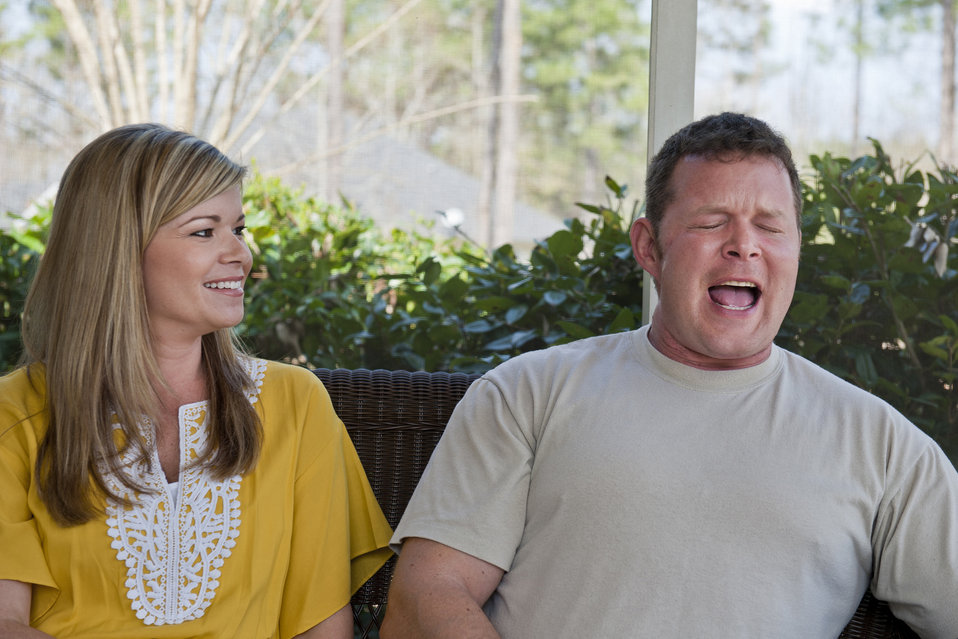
Master Sgt. Robert Disney and his wife, Tess, Feb. 24, 2011, tell the story of their first phone conversation. After a year of dating with a deployment separating them for six months, the two got married one week after Sergeant Disney returned in 2005. Sergeant Disney is the 347th Rescue Group standards and evaluations superintendent.